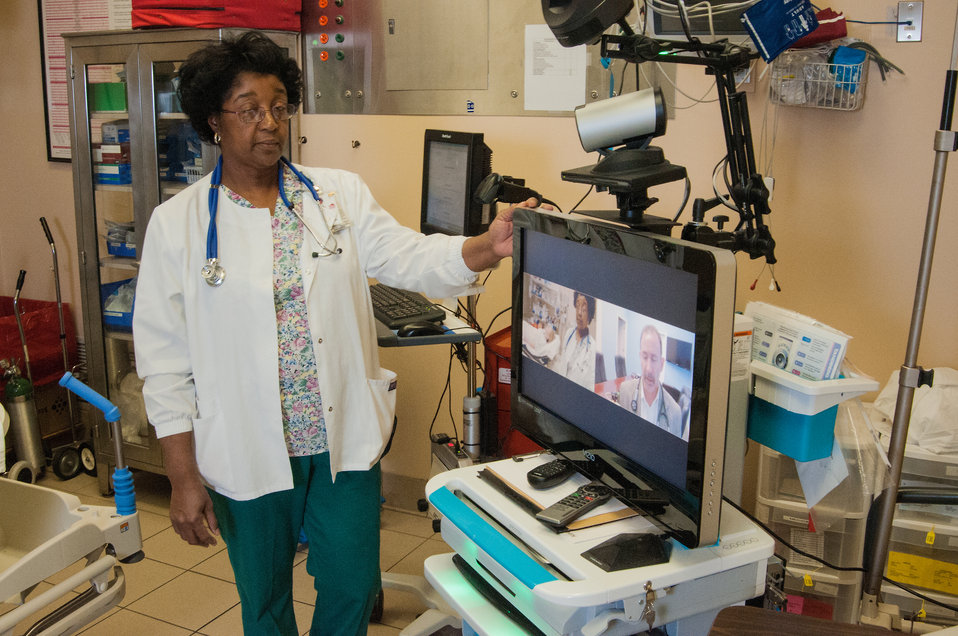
R.J. Taylor Memorial Hospital, Inc. Emergency Room(ER)/ Intensive Care Unite (ICU) Nurse Manager Lynn Grant, RN, in Hawkinsville, GA discusses patients’ diagnosis and symptoms with a doctor in Atlanta, GA via the hospitals Electronic Medical Records System on Mar. 6, 2013. The Electronic Medical Records System is an electronic point-of-care capture of medical data that can be easily accessed and allow for integration across different health care settings with internet-work connected information systems. Such records may include a wide range of data in comprehensive or summary form, including demographics, medical history, medication allergies, immunization status, laboratory test results, radiology images and billing information. The hospital purchased the Electronic Medical Records System under an incentive program by the Federal government through the U.S. Department of Agriculture (USDA) Rural Development (RD) Community Facilities Loan (CF) that ensures fiscally responsive access to superior quality integrated health care.